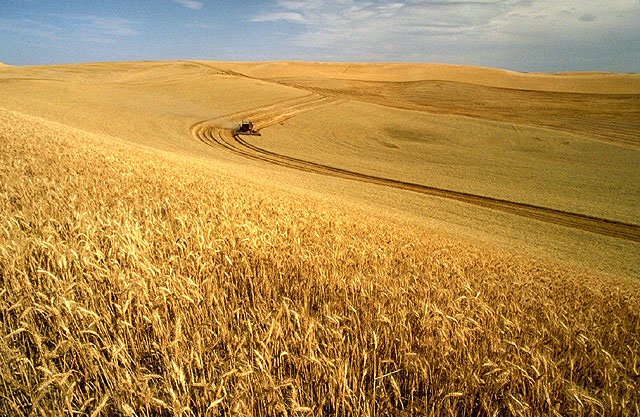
Wheat harvest

Photo credit: USDA/Scott Bauer

Decreasing agricultural yields per acre due to climate change could increase pressure for the conversion of more acres of native grasslands to agriculture lands